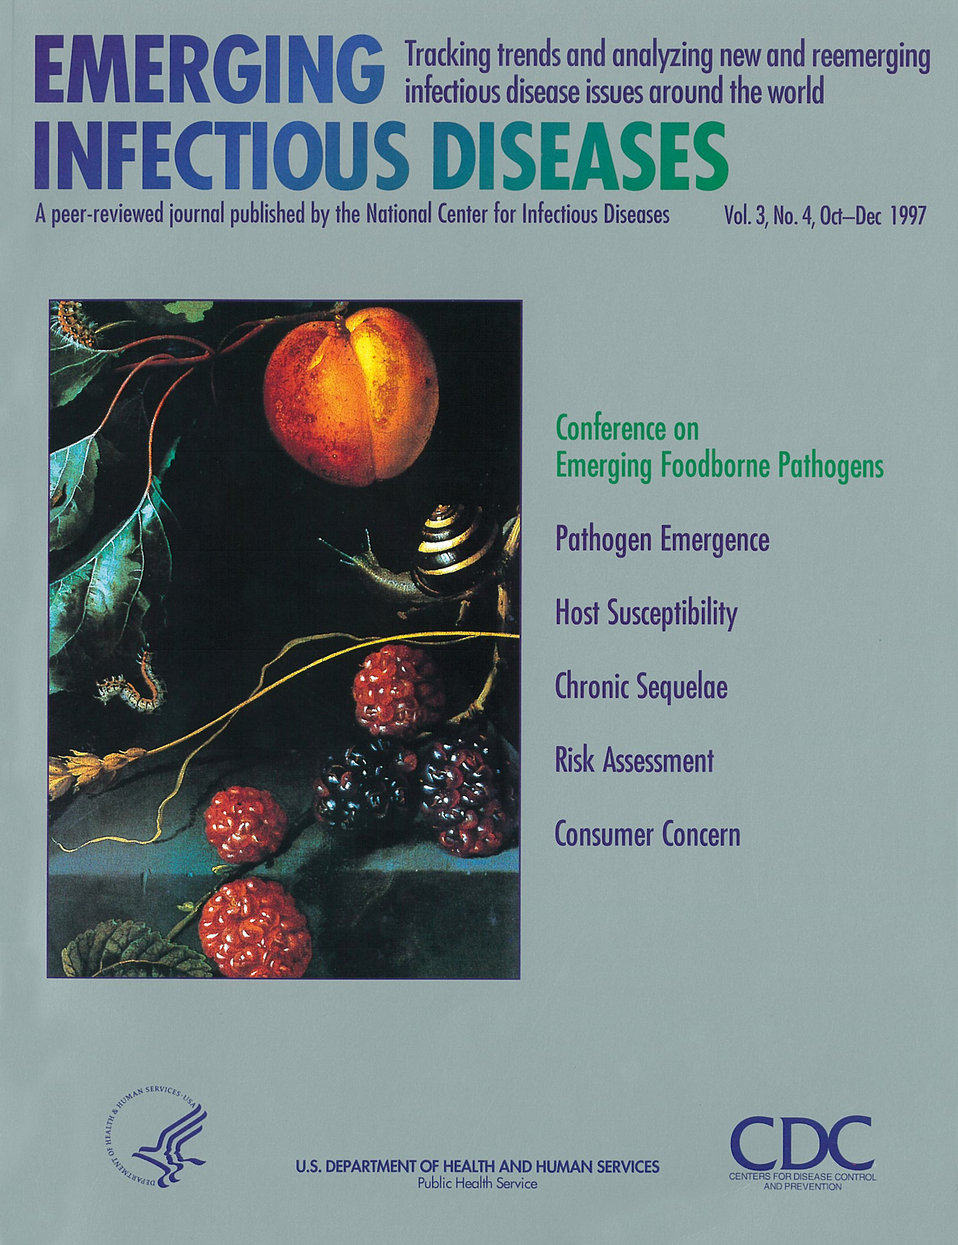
Emerging Infectious Diseases (EID) cover artwork for Volume 3, Number 4, October-December 1997 issue.